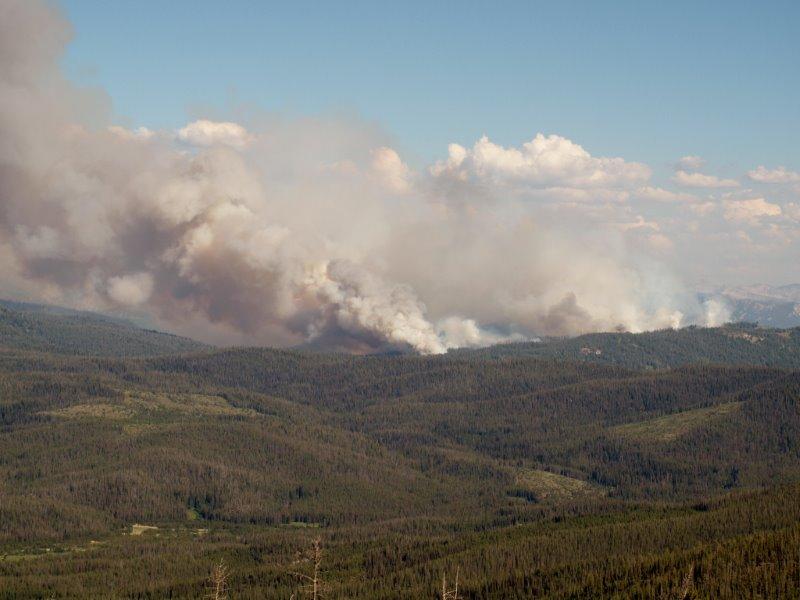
The Ridge Fire in the Boise National Forest, ID near Lowman, ID began on Jul. 16, 2013 by lightning and has consumed approximately 5,143 acres. The Ridge Fire is approximately 20% contained.